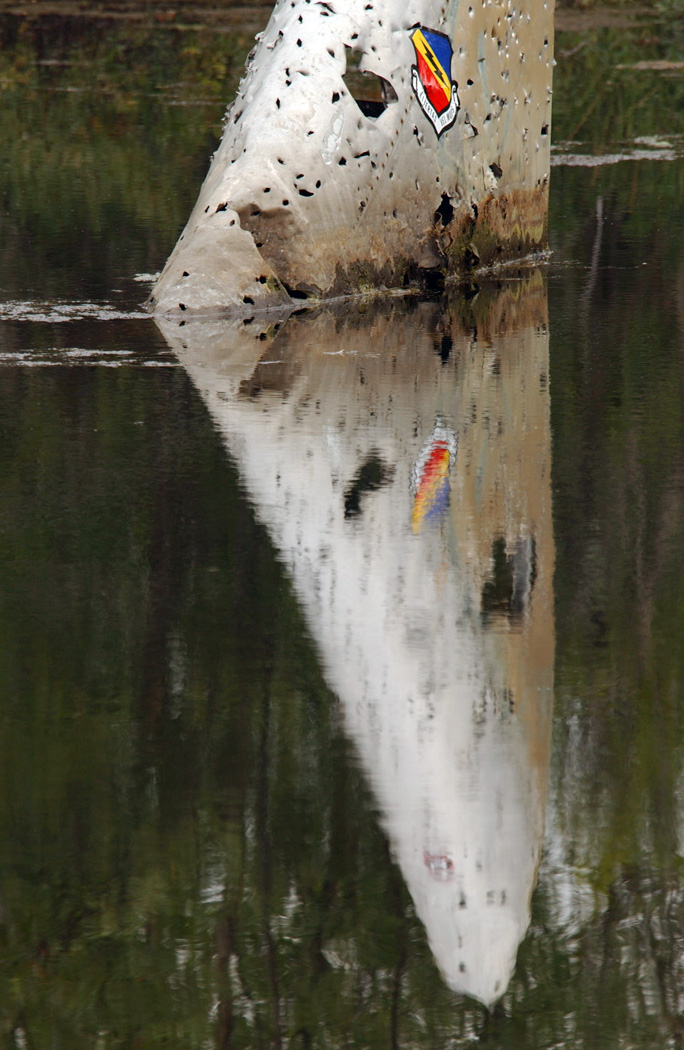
The Lady

EIELSON AIR FORCE BASE, Alaska -- The tail fin of the